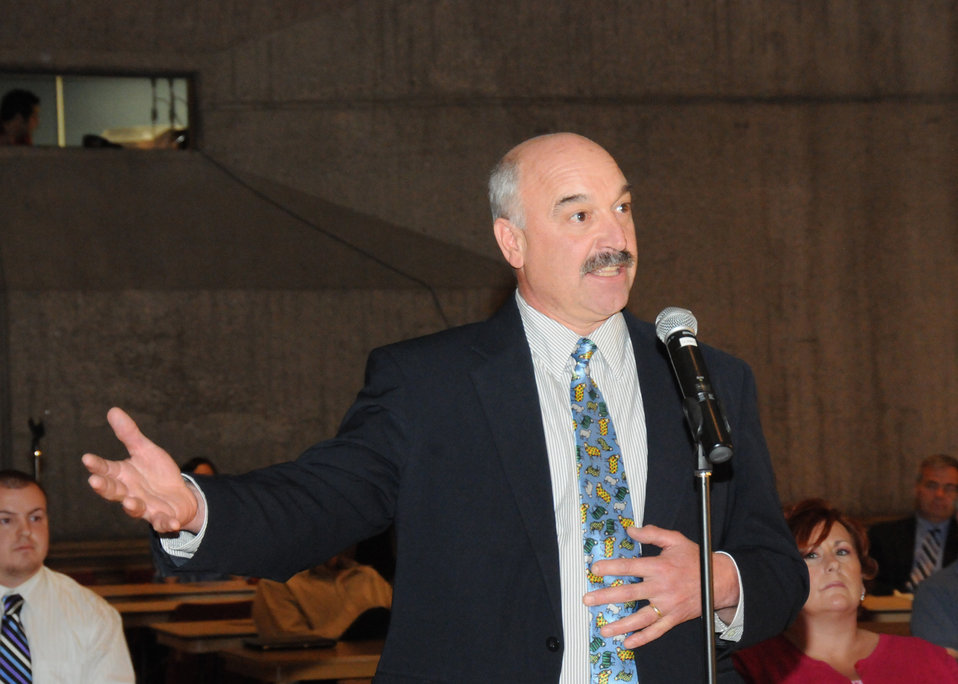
An Agriculture employee expresses his opinion at the last in a series of six employee listening sessions on the Cultural Transformation of the United States Department of Agriculture (USDA). The session was held on the campus of the University of Massachusetts in Amherst, MA. on Wednesday, May 5, 2010. USDA photo 10di1342-115